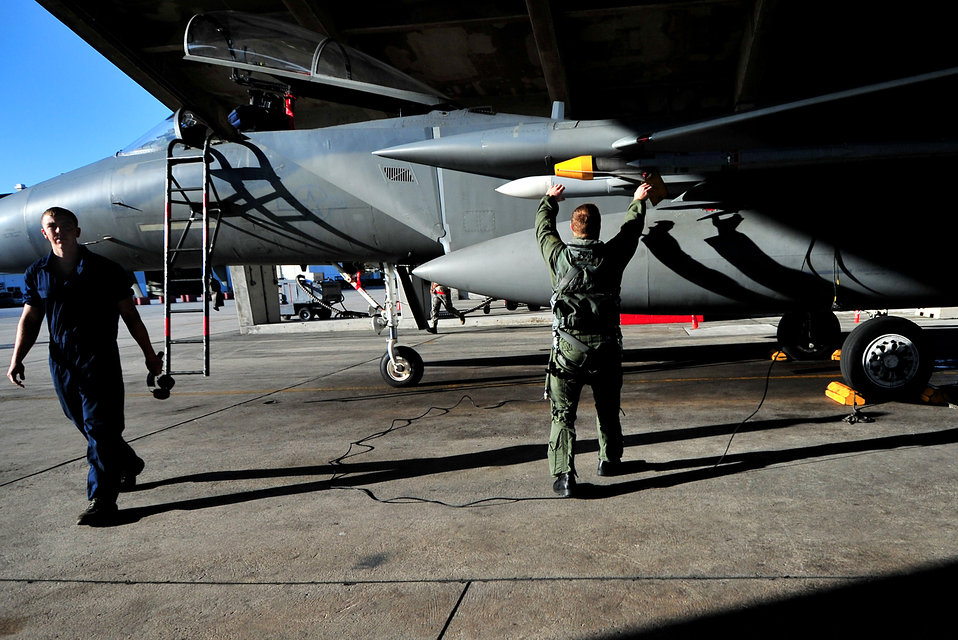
Joint Bilateral Training

A pilot from the 44th Fighter Squadron runs his preflight inspection before take-off Feb. 23, 2010, at Kadena Air Base, Japan. Kadena Airmen were participating in joint bilateral training with other U.S. forces and the Japan Air Self Defense Force from Feb. 22 to 26.